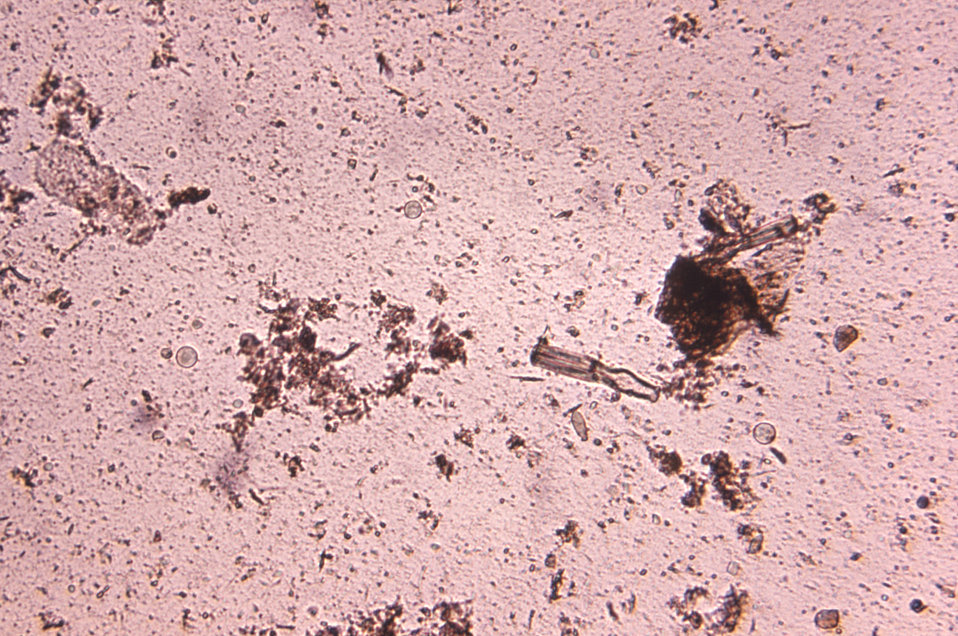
Magnified 100X, this direct mount, unstained photomicrograph revealed the presence of three cysts of the protozoan parasite, Entamoeba coli, as well as what appears to be a trophozoite. This is one intestinal parasite, which lives as a commensal organism, existing harmlessly in the human digestive tract. Of importance, is the fact that this organism can often be confused with its pathogenic counterpart, E. histolytica.